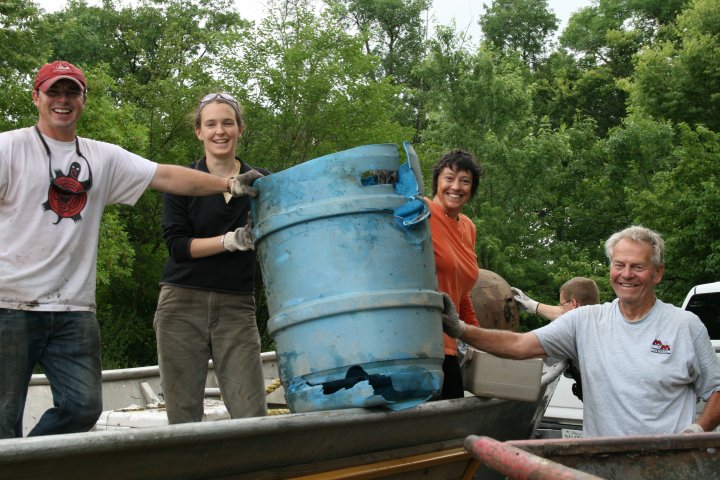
Chad, Sarah, Christine and David with their prize barrel

Living Lands and Waters Founder and President Chad Pregracke and volunteers Sarah, Christine and David pose with the barrel that “gave them trouble” during The Great Mississippi River Cleanup held June 16, 2012 on the Winona District.